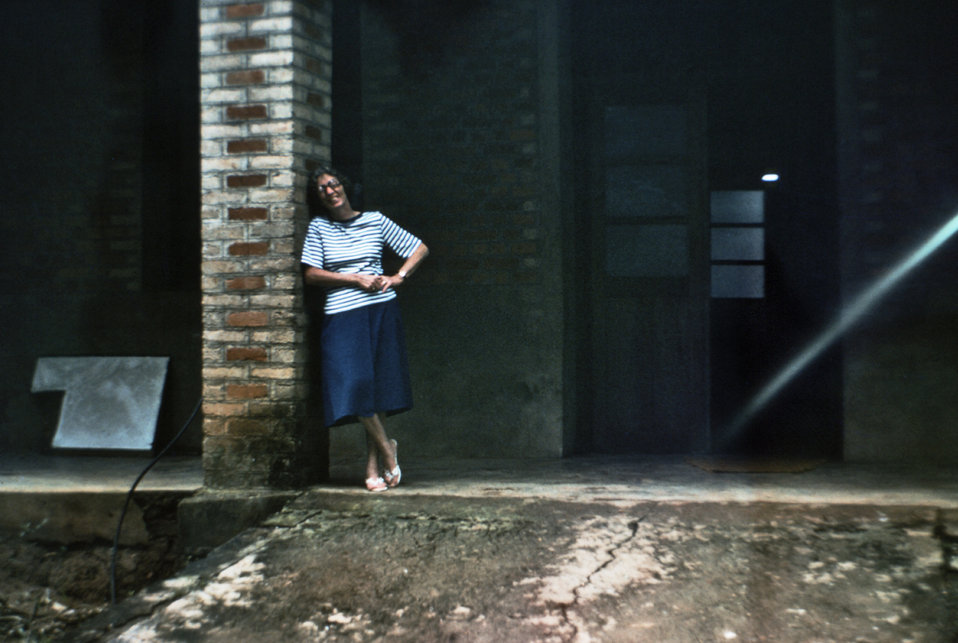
This photograph showed Dr. Margaret Isaacson standing in front of a Yambuku, Zaire hospital theatre block that was used as a temporary ICU for Ebola patients during the country's 1976 outbreak.